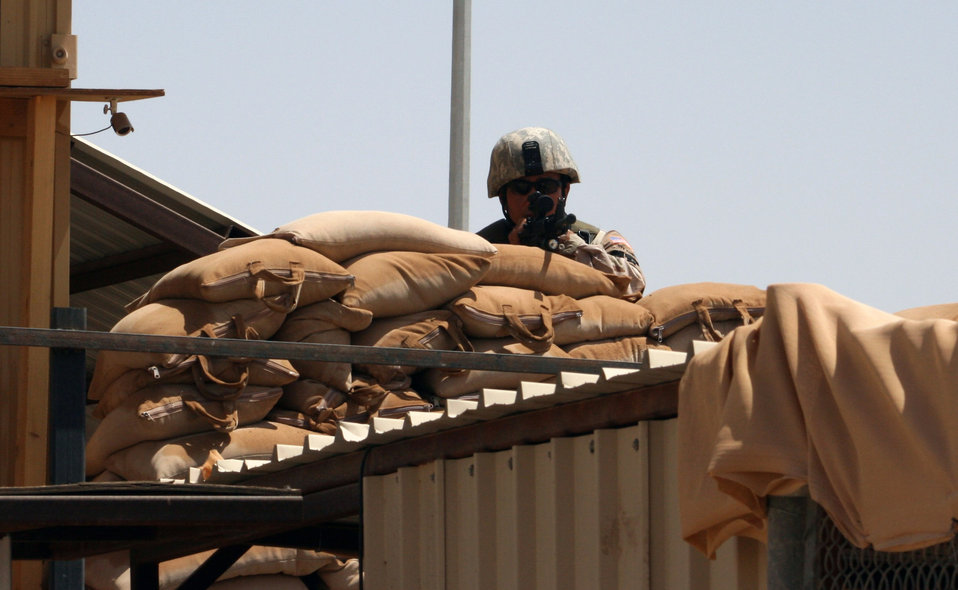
Reserve liaison office answers for AOR

Staff Sgt. Jojo Garcia mans a post at a Southwest Asia base Oct. 1. The 64th Air Expeditionary Group there provides force protection and base support to enable U.S. security assistance operations and enhance strategic partnerships. The group is 72 percent Guard, 25 percent active duty, and 3 percent Air Force Reserve, exemplifying total force and joint concepts. Sergeant Garcia is Air National Guard member with the 64th Expeditionary Security Forces Squadron.